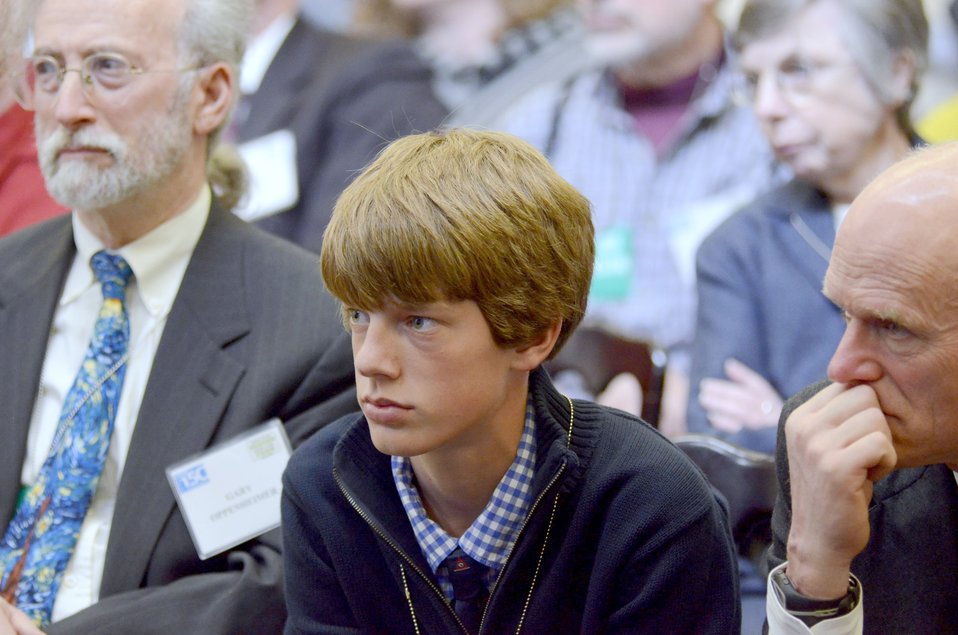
Orren Fox, (center, aka @happychickens) a teenage chicken/bee keeper, from Boston, listens to Agriculture Deputy Secretary Kathleen Merrigan speak during a Know Your Farmer Compass event that utilized twitter social media to continue the National Conversation on Local and Regional Food projects and how they offer economic opportunities to local farmers, ranchers and food entrepreneurs, at the White House, in Washington, D.C., on Monday, March 5, 2012. Foxx learned where his food comes from, by raising chickens in his backyard since he was nine. Now he has 32 chickens, 4 ducks and over 200,000 bees. He is the face of Agriculture’s future. He is joined by his father, Henry (right), during this continuation of a National Conversation on Local and Regional Food projects and how they offer economic opportunities to local farmers, ranchers and food entrepreneurs. AmpleHarvest.org founder Gary Oppenheimer is to the left.